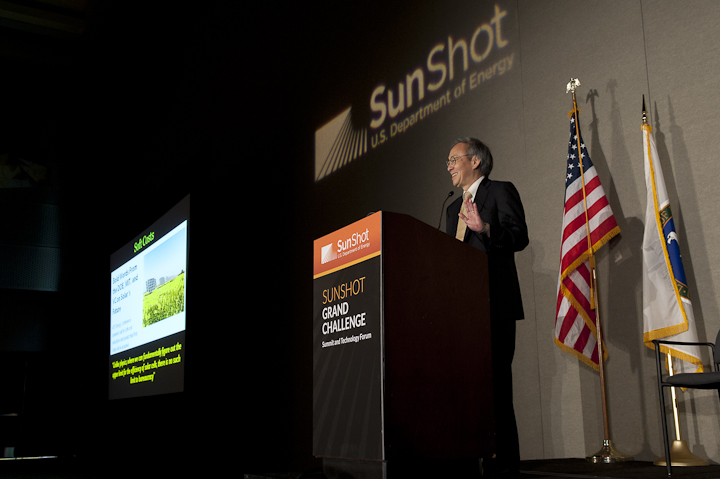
SunShot Keynote

June 13, 2012- Steven Chu, Secretary of Energy, U.S. Department of Energy gives the keynote address at the SunShot Grand Challenge Summit and Technology Forum in Denver, Colorado.